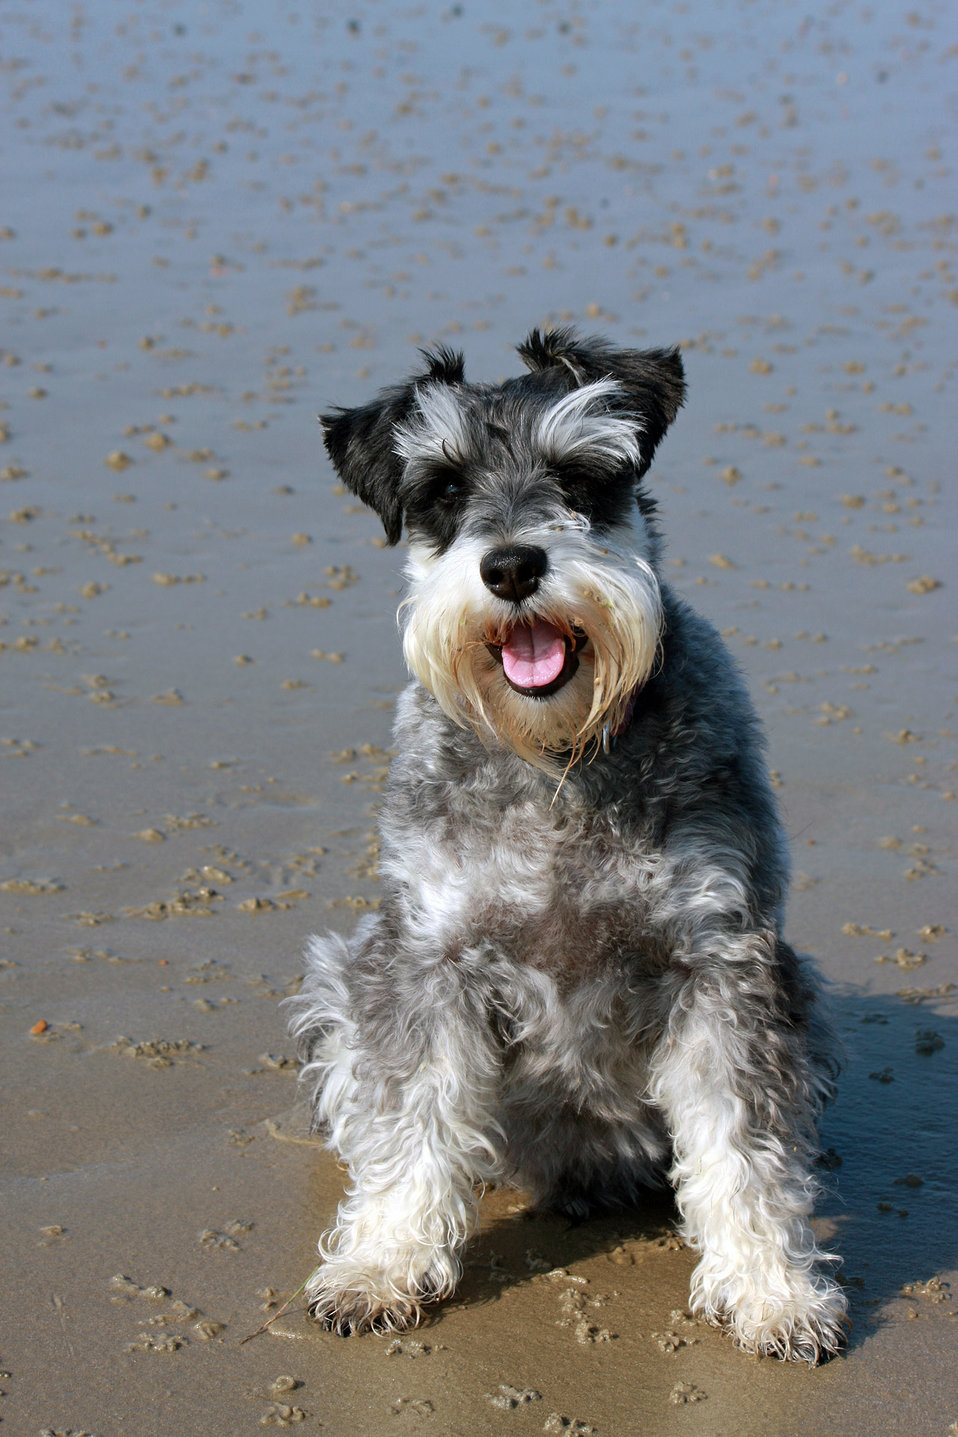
Schnauzer dog

Beautiful miniature schnauzer dog sitting on the beach photo image.